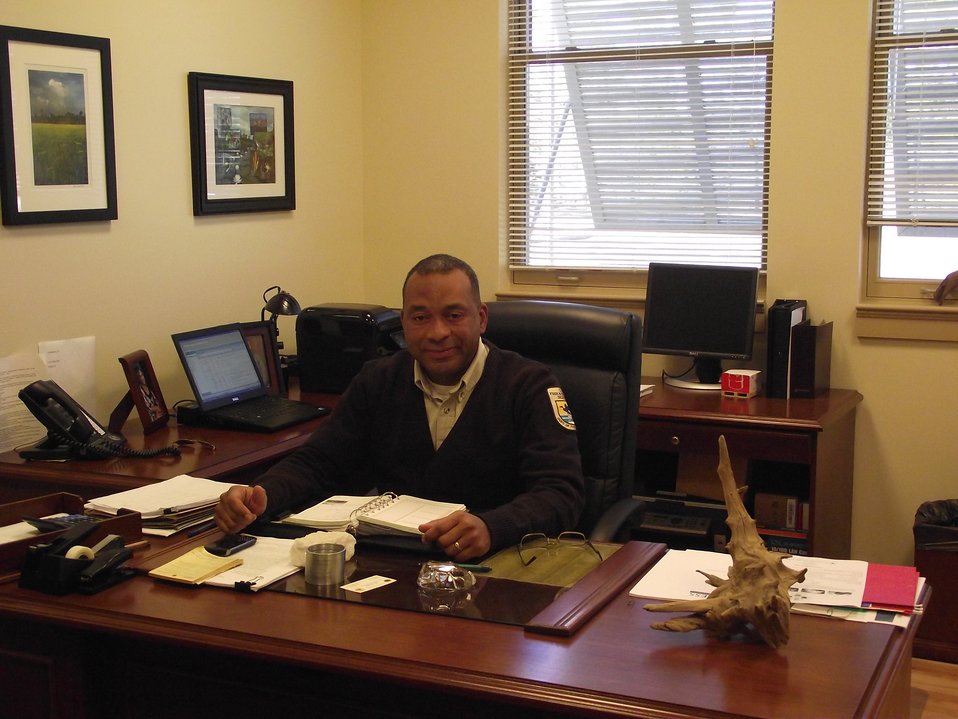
Maury Bedford

Maury W. Bedford, manager of the Gulf Gulf Coast National Wildlife Refuge Complex in Mississippi, at his desk. (USFWS)